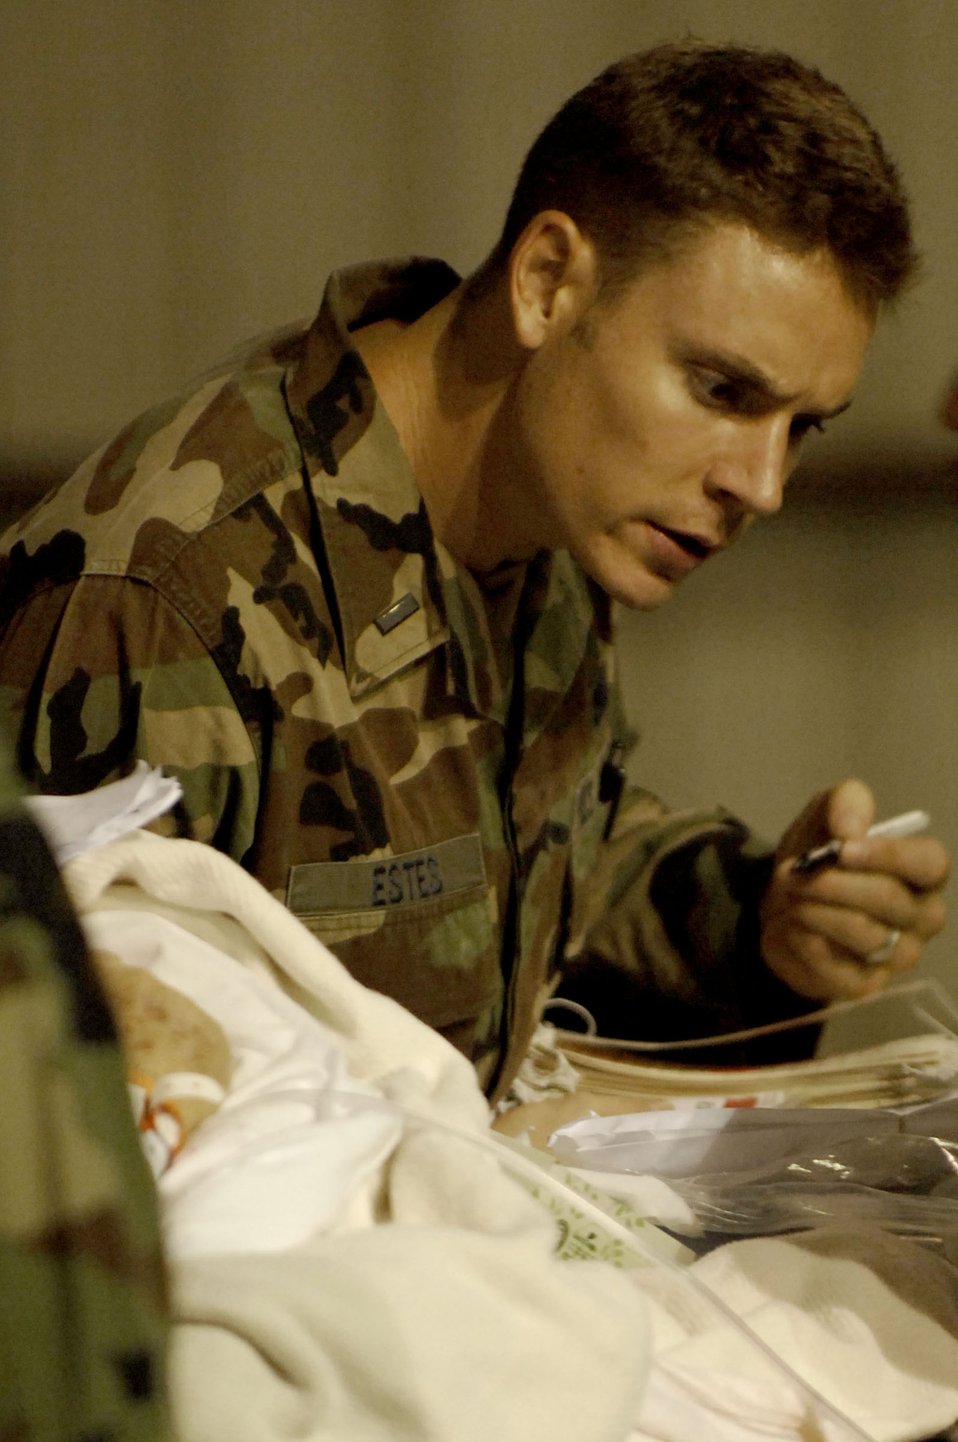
AMC aircraft, personnel supporting Hurricane Ike evacuations

First Lt. Jason Estes tends to a patient waiting for evacuation in Corpus Christi, Texas, Sept. 11. The team is helping to evacuate patients from a local area hospital. Air Force aircraft transported patients to safe locations out of Hurricane Ike's path. Lieutenant Estes is the director of operations for the mobile aeromedical staging facility team from MacDill Air Force Base, Fla.